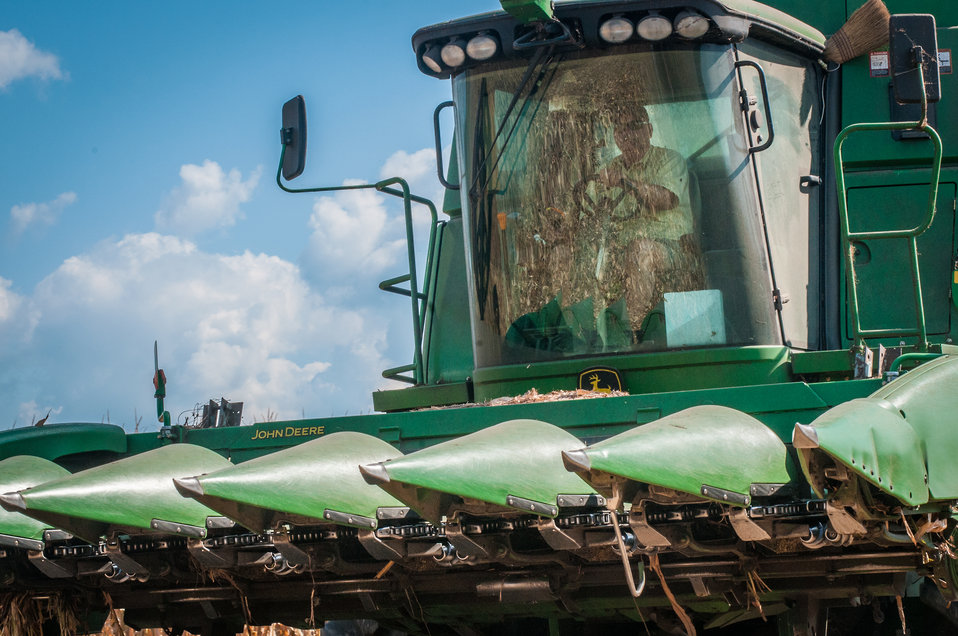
John N. Mills, Jr. operates his six-row corn harvester during the feed corn harvest at the John N. Mills & Sons farm; a family owned business located in the Hanover and King William Counties of Virginia, on Friday, Sept. 20, 2013. Pleasant Level Farm was the original farm from a Land Grant from King George III of England to Nicholas Mills in 1725. The original acreage has never left the Mills family name and continues to be farmed by the family.
Now the farm covers 5,744 acres that produce corn, wheat, soybeans, barley, hay, timber, and pastures a large herd of beef cattle. They have been using conservation and stewardship practices since the 1960s. Some of the efficient practices include no-till planting and cover crops to reduce soil erosion and prevent the leaching of nutrients into ground water, as well as livestock stream exclusion. The farm has several conservation easements that aids in the preservation and restoration of wetlands and waterways. For information about the U.S. Department of Agriculture (USDA), please go to www.usda.gov.